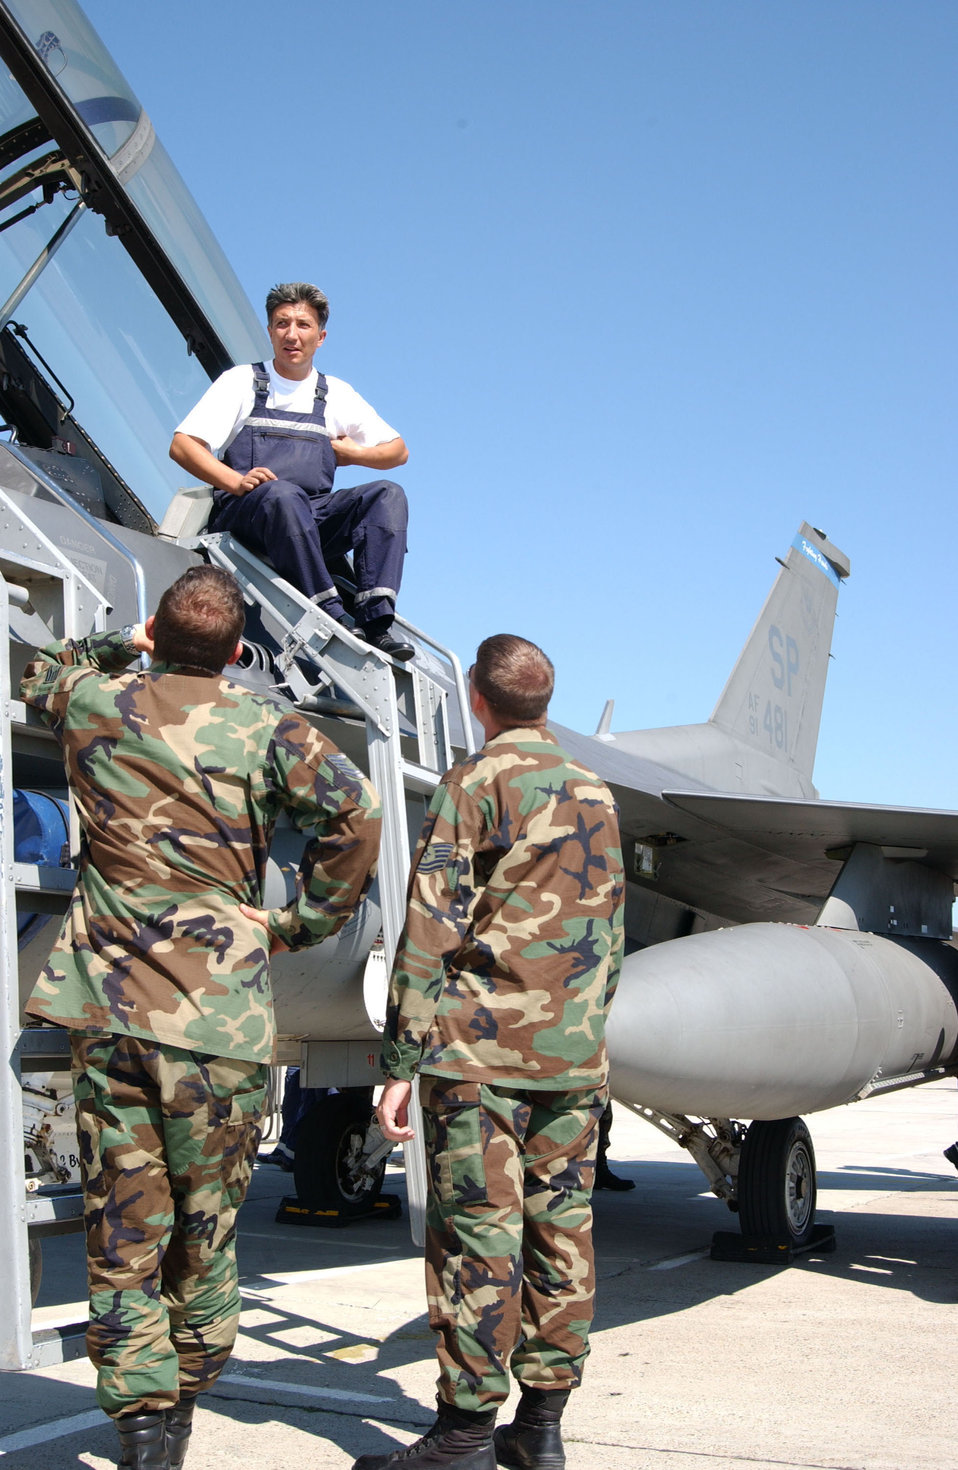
Viper Lance wraps up

Master Sgt. Apolstol Dinca (sitting) checks the cockpit of an F-16 Fighting Falcon during Exercise Viper Lance 2006 at Mihail Kogalniceanu Air Base, Romania, Aug. 24. Tech. Sgts. Rich Magoni (left) and Timothy Bliefnick, 22nd Expeditionary Fighter Squadron crew chief and avionics craftsman, answer Sergeant Dinca's questions about the aircraft. The exercise marks the first time F-16 crews have trained in Romania. Sergeant Dinca is a Romanian air force maintainer.